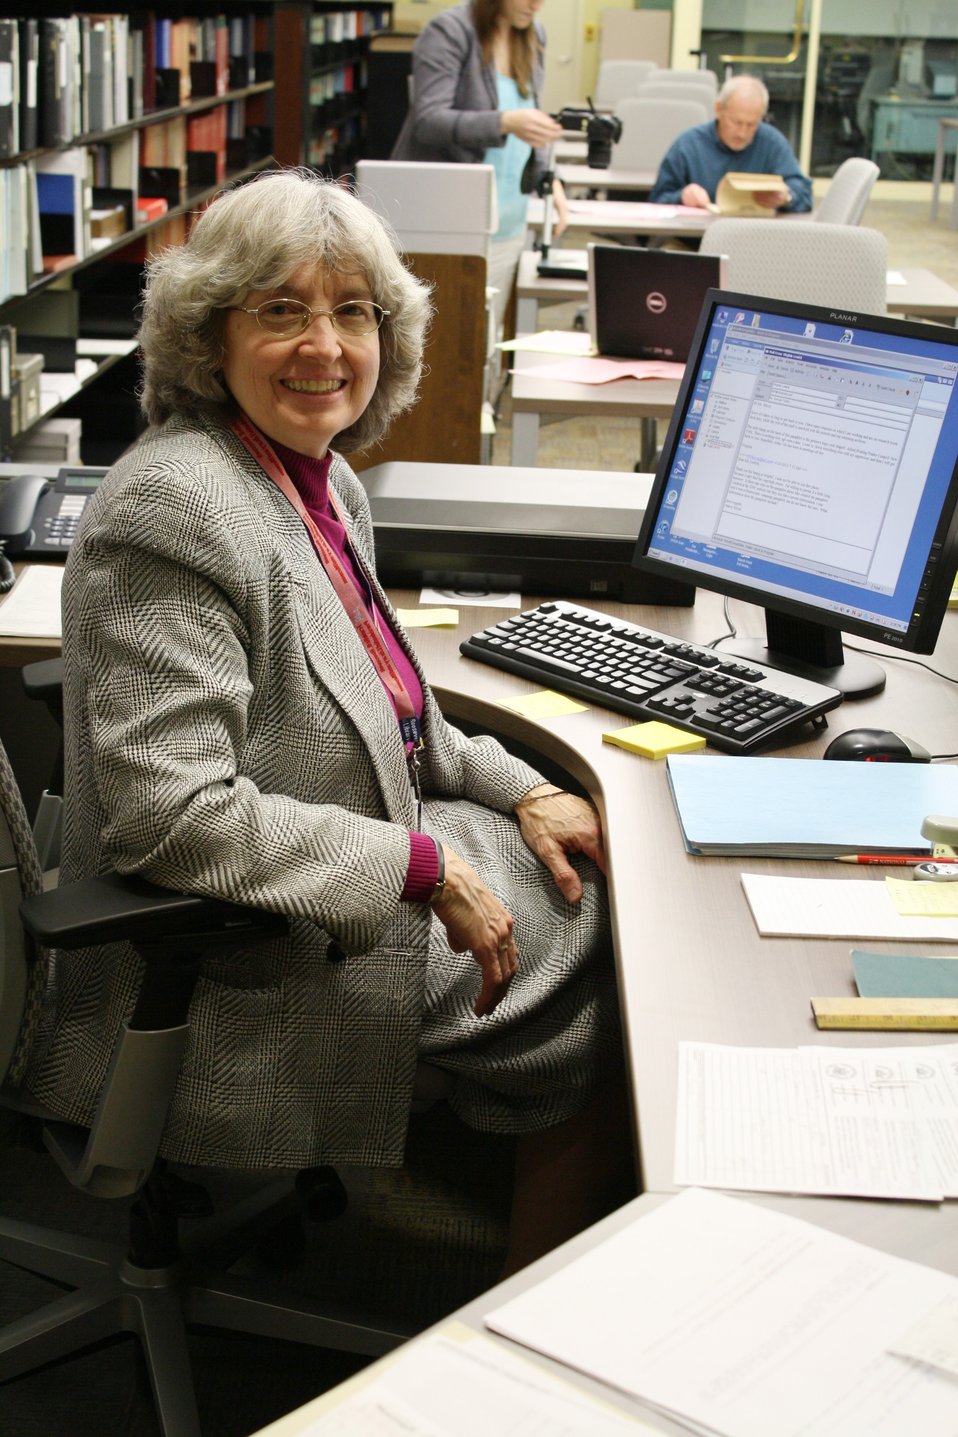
Archivist Virginia Lewick in the FDR Library research room.; Location: Franklin D. Roosevelt Presidential Library, Hyde Park, New York